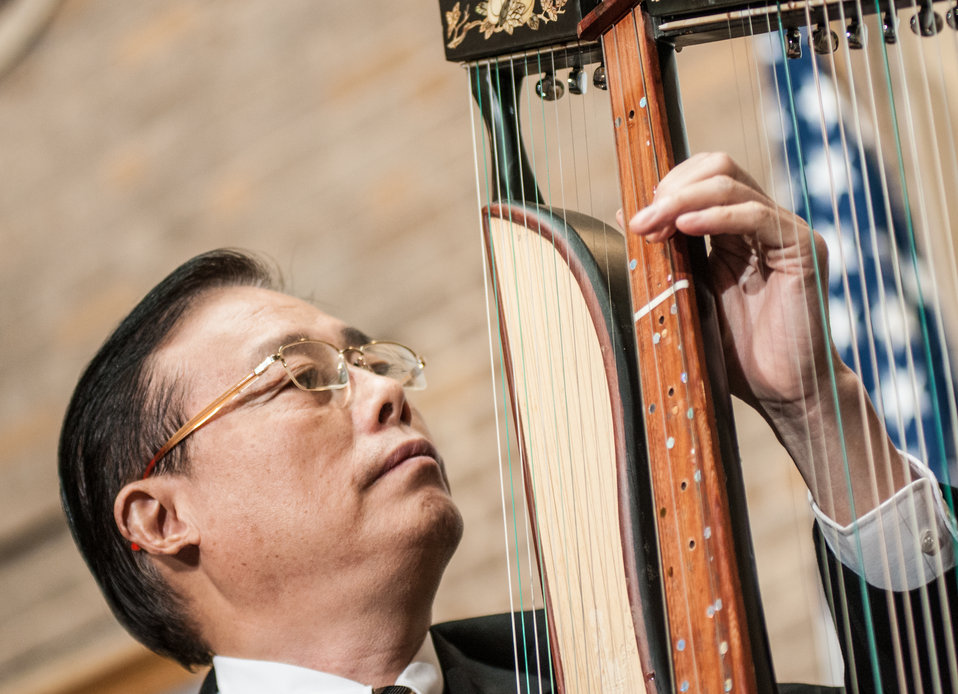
Washington Chinese Traditional Orchestra’s Mr. Wen gave a solo performance of “Fisherman Singing at Dusk” using an electric string instrument he invented that allows him to strum, pluck or bow using the three sets of strings on the one instrument, during the U.S. Department of Agriculture (USDA) Asian Pacific American Heritage Month Observance, at the USDA headquarters, Whitten Building patio, in Washington, D.C., on Thursday, May 23, 2013. This year’s theme is “Building leadership; Embracing the Cultural Values and Inclusions.”